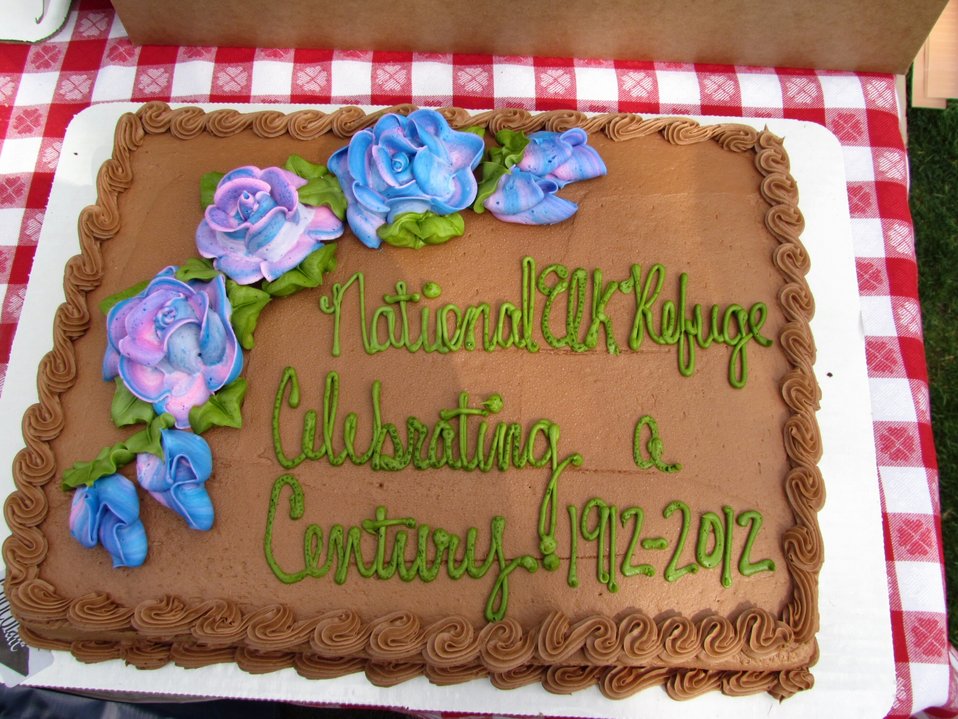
It's Not a Celebration Without Cake

The National Elk Refuge's centennial was highlighted at the 45th annual Boy Scout antler auction on Saturday, May 19, 2012. Wilson (Wyoming) Cub Scout Pack 40 provided birthday cakes which were cut and served to spectators gathered in Jackson's Town Square during the antler auction.

Credit: USFWS / Steve Miller, National Elk Refuge volunteer